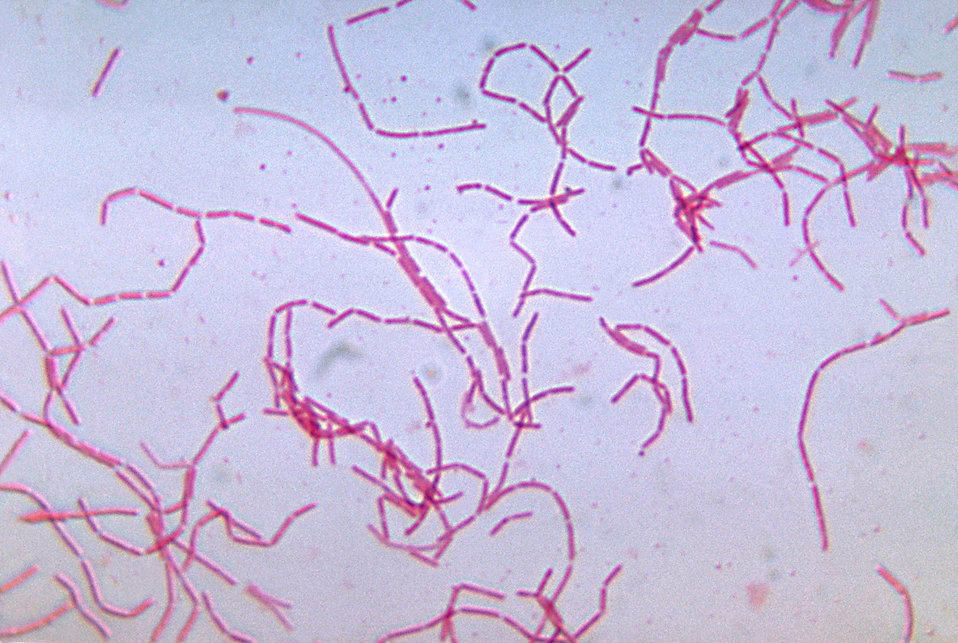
This photomicrograph shows Bacteroides trichoides after being cultured in a thioglycollate medium for 48 hours.